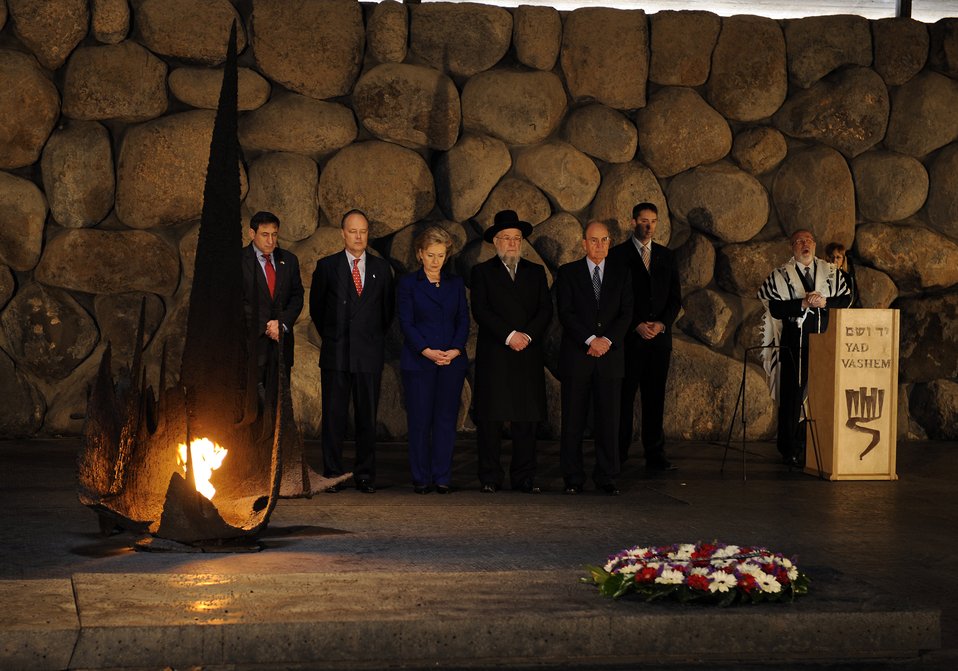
Secretary Clinton Lays a Wreath in the Hall of Remembrance

U.S. Secretary of State Hillary Clinton relights the eternal flame and lays a wreath in the Hall of Remembrance in Jerusalem March 3, 2009.